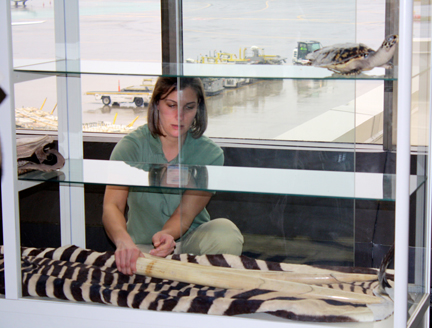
Setting up the Ivory Display